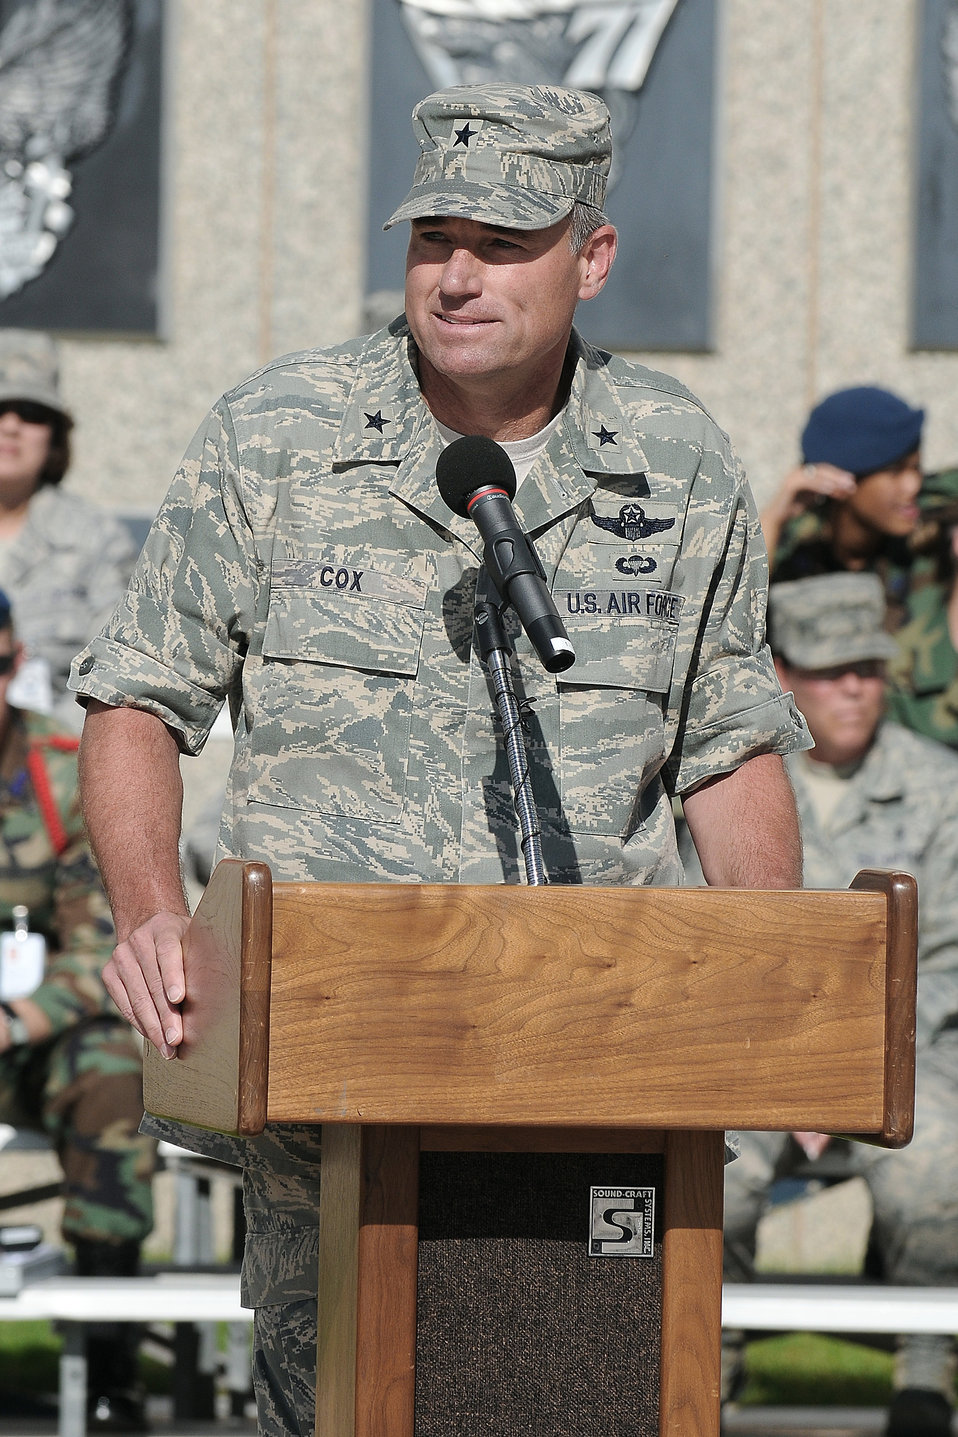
Welcome to the Academy

Commandant of Cadets Brig. Gen Samuel Cox speaks to the Class of 2013 during the Oath of Allegiance Ceremony June 25 at the U.S. Air Force Academy in Colorado Springs, Colo. Approximately 1,400 cadets were selected for the Class of 2013 out of nearly 10,000 applicants.